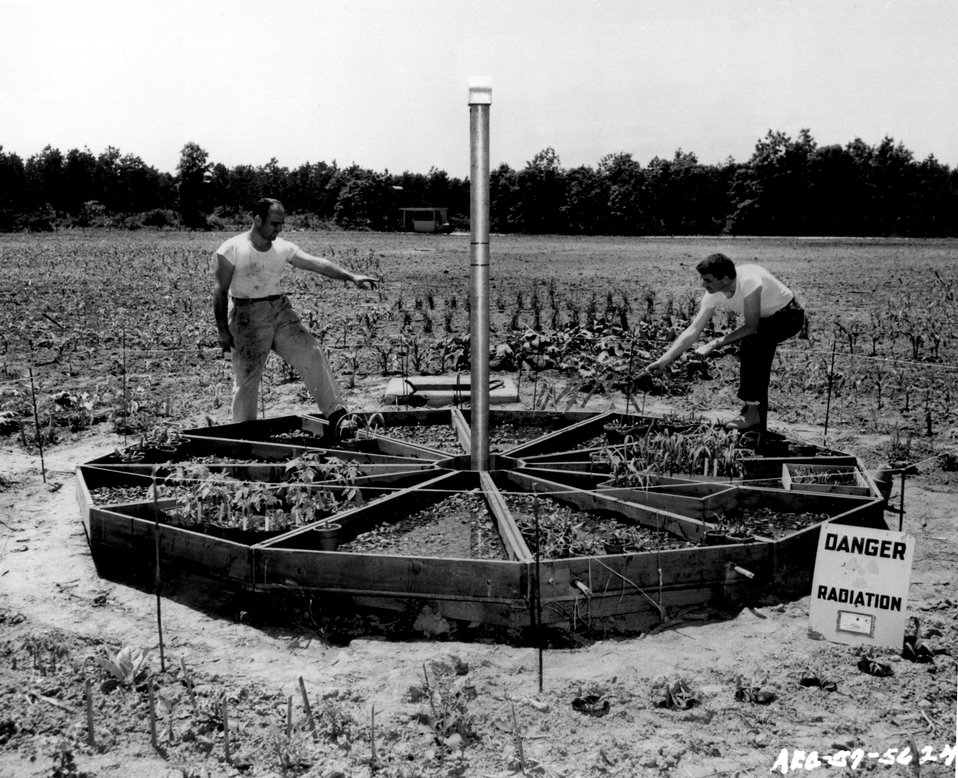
Radiation field with a cobalt source at the Brookhaven National Laboratory. c. 1957